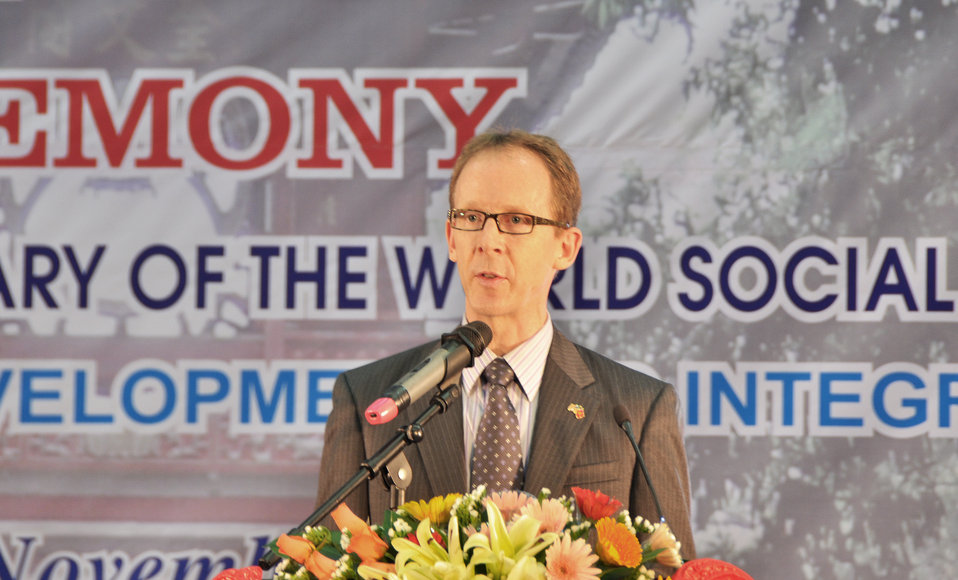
USAID Mission Director Joakim Parker speaks at the ceremony to mark the World Social Work Day.

Hanoi, November 8, 2013.